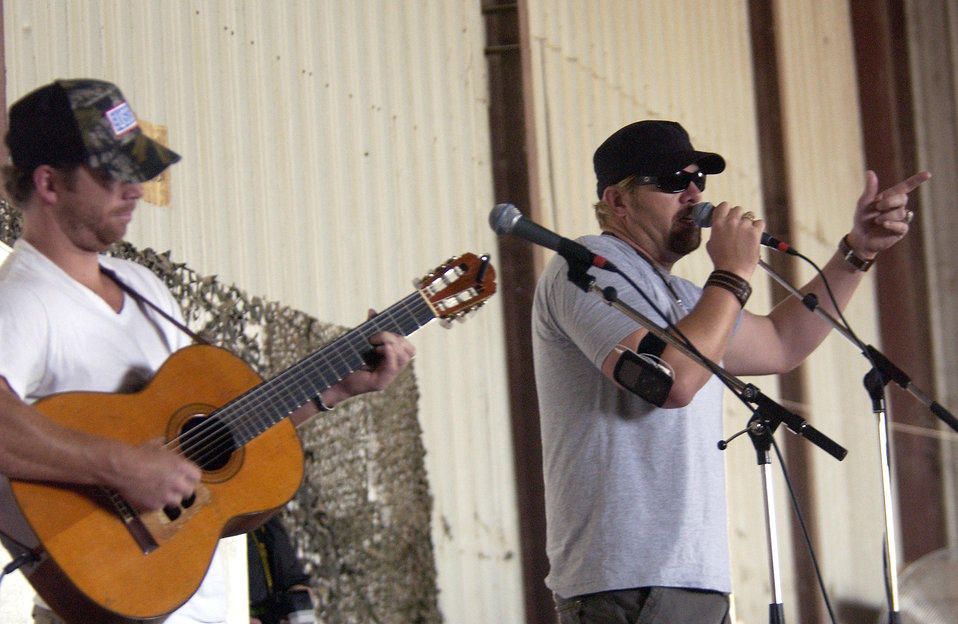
Toby Keith performs for the troops

Country music performer Toby Keith and his songwriter Scotty Emerick perform for servicemembers at Forward Operating Base Warhorse, Iraq, on Saturday, May 27, 2006. The base in the Diyala Province was the first stop on Mr. Keith's USO tour.